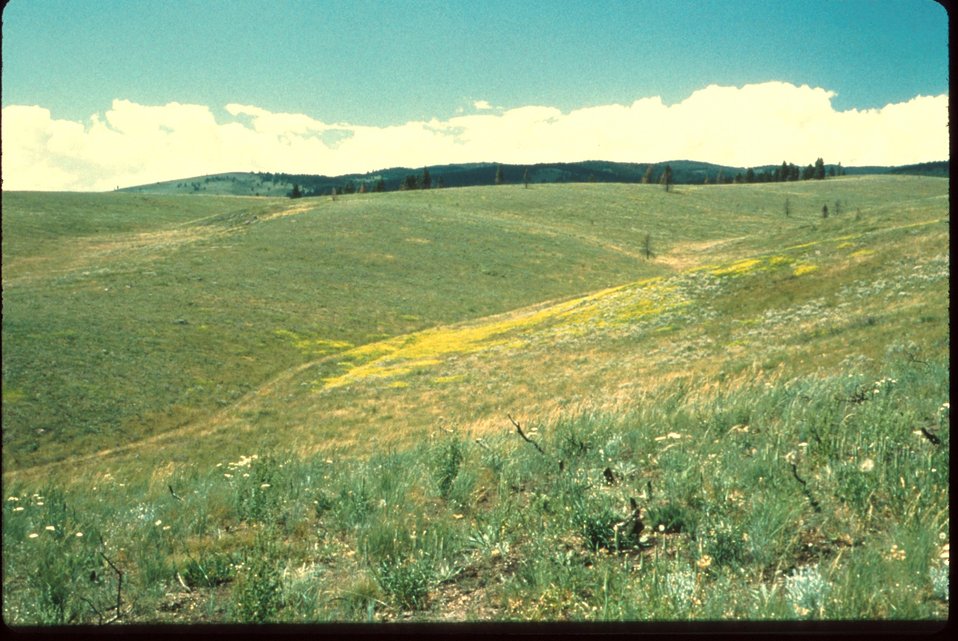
Leafy Spurge after a fire Idaho vegetation Plants in BLM